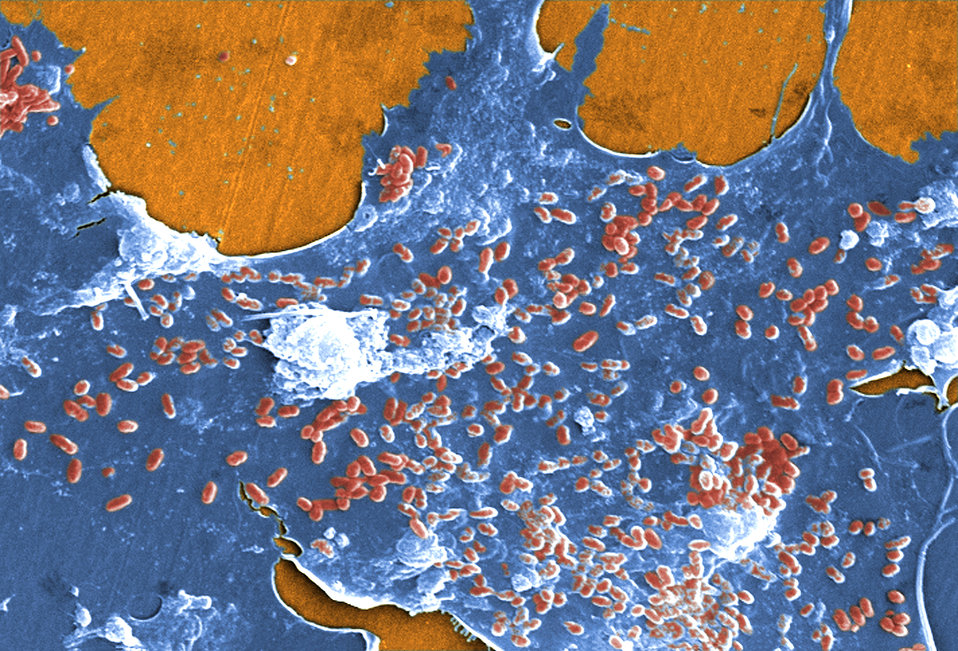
This digitally-colorized scanning electron micrograph (SEM) of an untreated water specimen extracted from a wild stream mainly used to control flooding during inclement weather, revealed the presence of unidentified organisms, which included bacteria, protozoa, and algae. In this particular view, a mass of gelatinous biofilm had enmeshed numbers of microorganisms, including amoebae and bacteria.